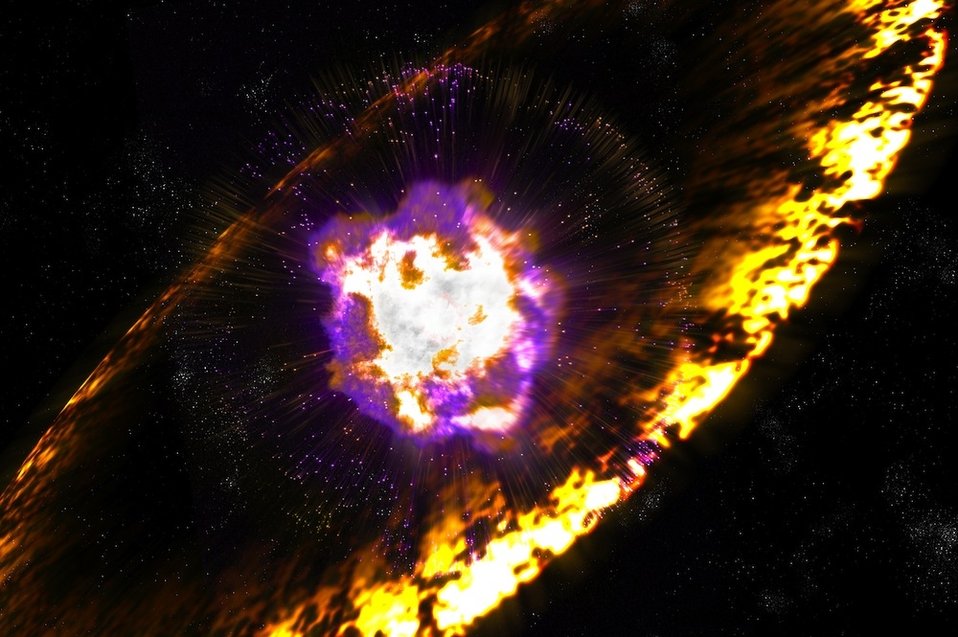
WHEN STARS EXPLODE, THE SUPERNOVAS SEND OFF SHOCK WAVES LIKE THE ONE SHOWN IN THE ARTIST'S RENDITION, WHICH ACCELERATE PROTONS TO COSMIC-RAY ENERGIES THROUGH A PROCESS KNOWN AS FERMI ACCELERATION.